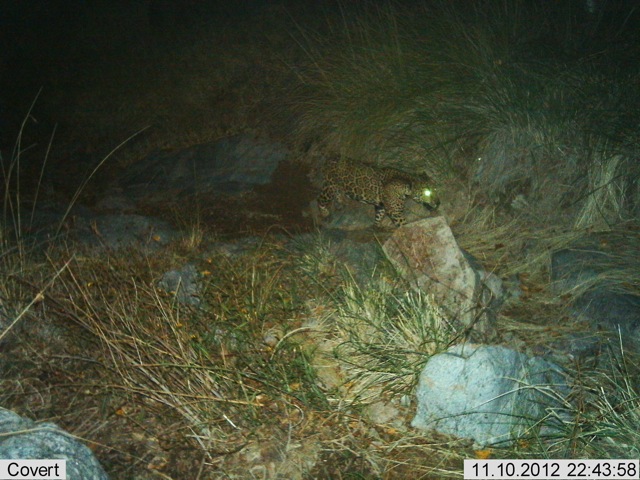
Male jaguar photographed by automatic wildlife cameras in the Santa Rita Mountains on Nov 10, 2012 as part of a U.S. Fish and Wildlife Service/Department of Homeland Security-funded jaguar survey conducted by University of Arizona. One of two photos taken the same night in two different locations.